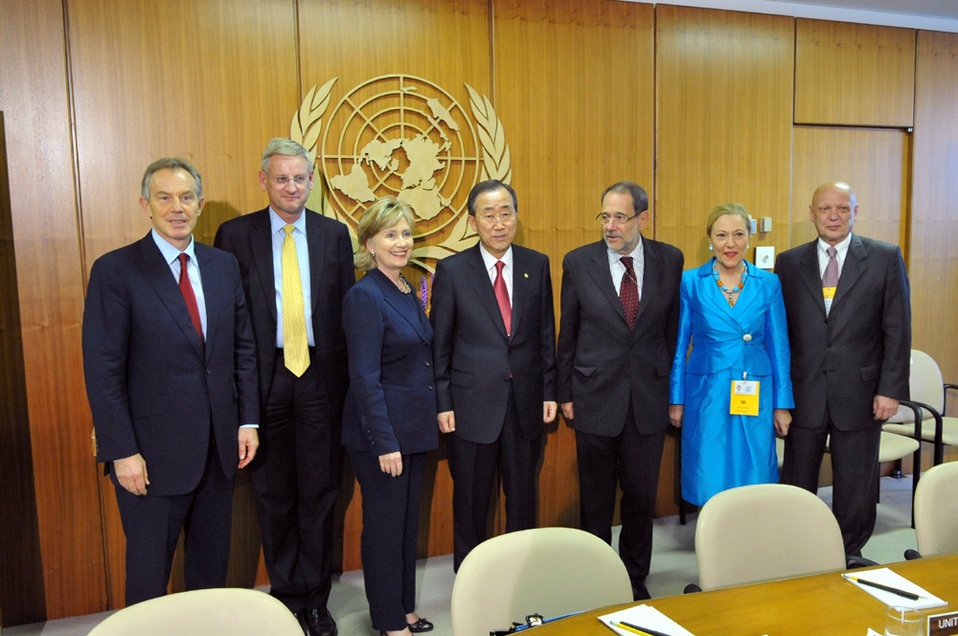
UNGA 2009: Quartet Meeting

U.S. Secretary of State Hillary Rodham Clinton poses with Quartet mmebers during a meeting of the Quartet at the United Nations headquarters during the 64th Session of the UN General Assembly in New York City, New York September 24, 2009.